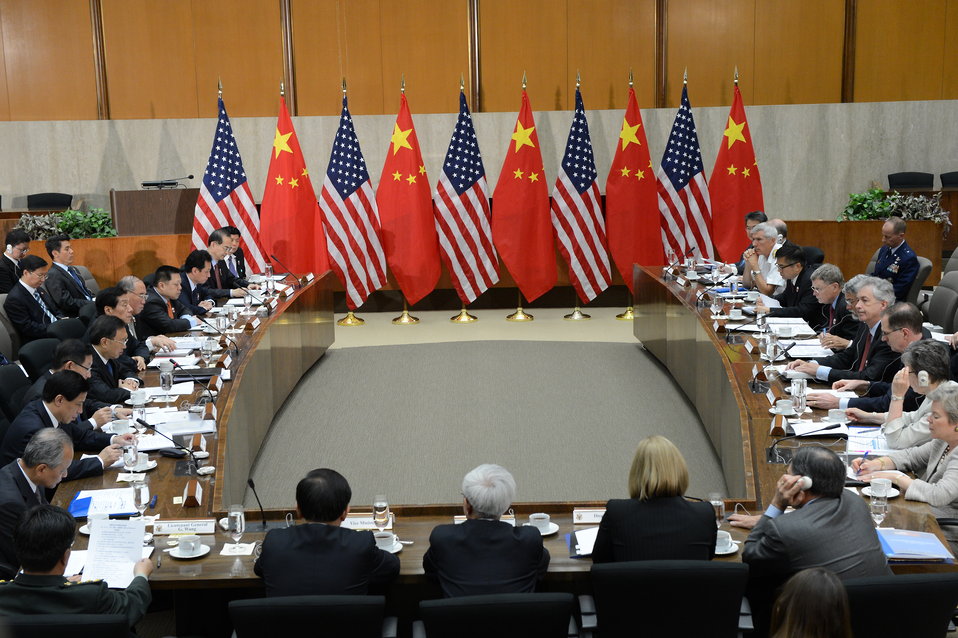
Deputy Secretary Burns and Chinese State Councilor Yang Participate in the Strategic Track Plenary Session

U.S. Deputy Secretary of State William Burns and Chinese State Councilor Yang participate in the Strategic Track Plenary Session during the U.S.-China Strategic and Economic Dialogue in the Loy Henderson Auditorium at the U.S. Department of State in Washington, D.C., on July 11, 2013.